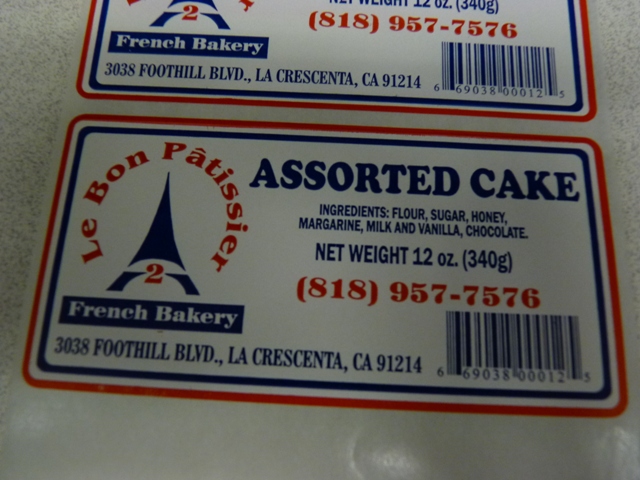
RECALLED - Pastry Products

April 5, 2011 – Product Recall – Le Bon Patissiere-2, Inc. Announces Voluntary Recall

On Select Le Bon Patissiere Products That Contain Undeclared Allergens. For additional information, please refer to the company issued press release available on FDA’s web

site at www.fda.gov/Safety/Recalls/ucm250211.htm